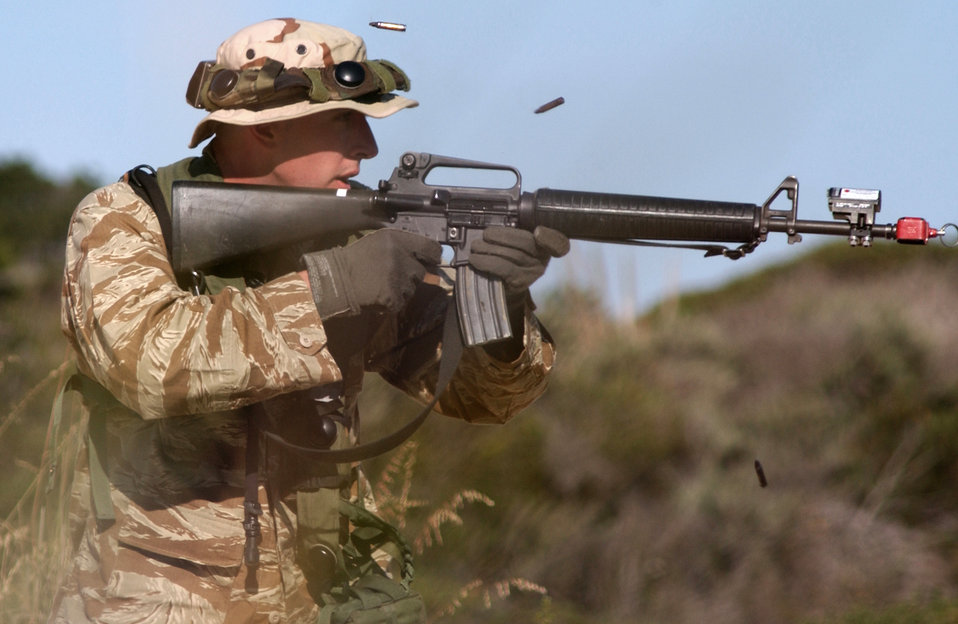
Cops and robbers

VANDENBERG AIR FORCE BASE, Calif. -- Senior Airman Luke Scown during the security forces tactics competition for Guardian Challenge here May 4. Guardian Challenge, the world's premier space and missile competition, is an annual four-day event. It tests the wartime readiness of Air Force Space Command's Airmen in spacelift, ICBM operations, communications, maintenance, helicopter operations, security forces and food preparation. Airman Scown is assigned to the 9th Security Forces Squadron at Beale Air Force Base, Calif.